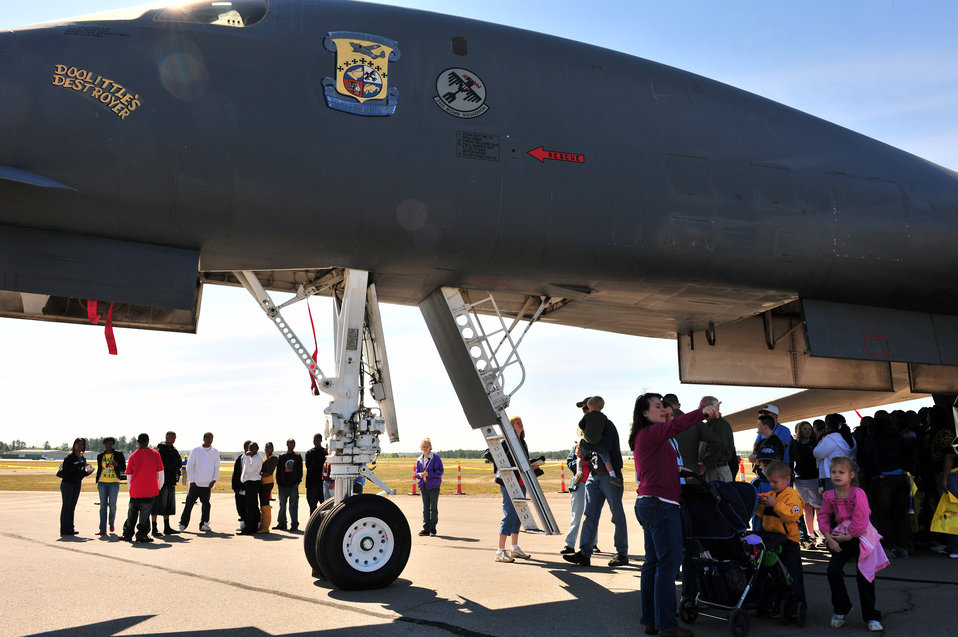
Thousands honor Doolittle Raiders at the 67th Reunion

A crowd gathers under a B-1 Lancer during a Doolittle Raider reunion April 17 at Columbia Metro Airport in Columbia, S.C. The B-1 from the 34th Bomb Squadron at Ellsworth Air Force Base, S.D., was unveiled with the Raider patch painted beside the canopy.